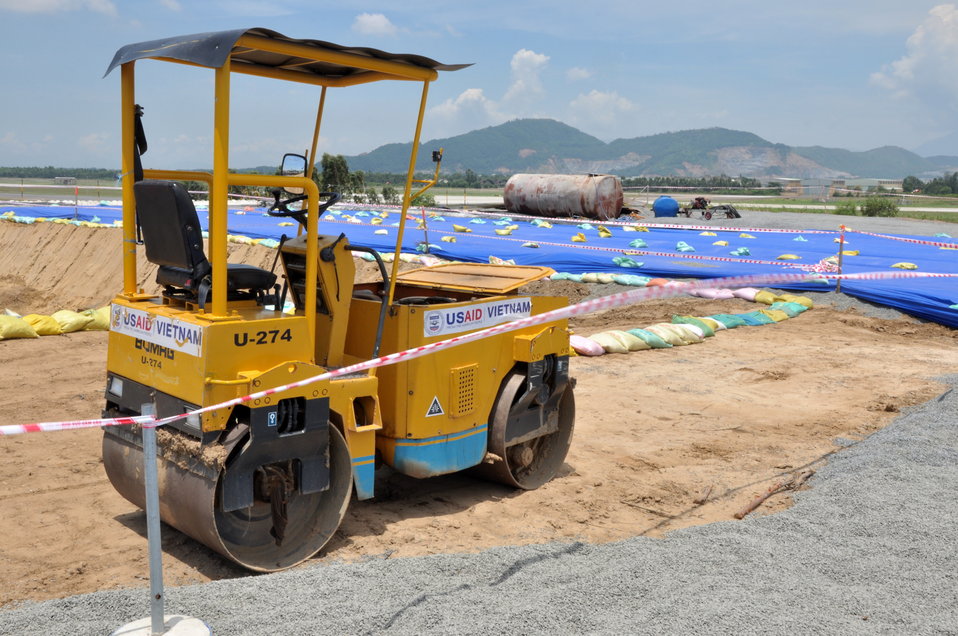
USAID Dioxin Contamination Project Progress

Progress at the Environmental Remediation of Dioxin Contamination Project at Danang Airport

July 16, 2013